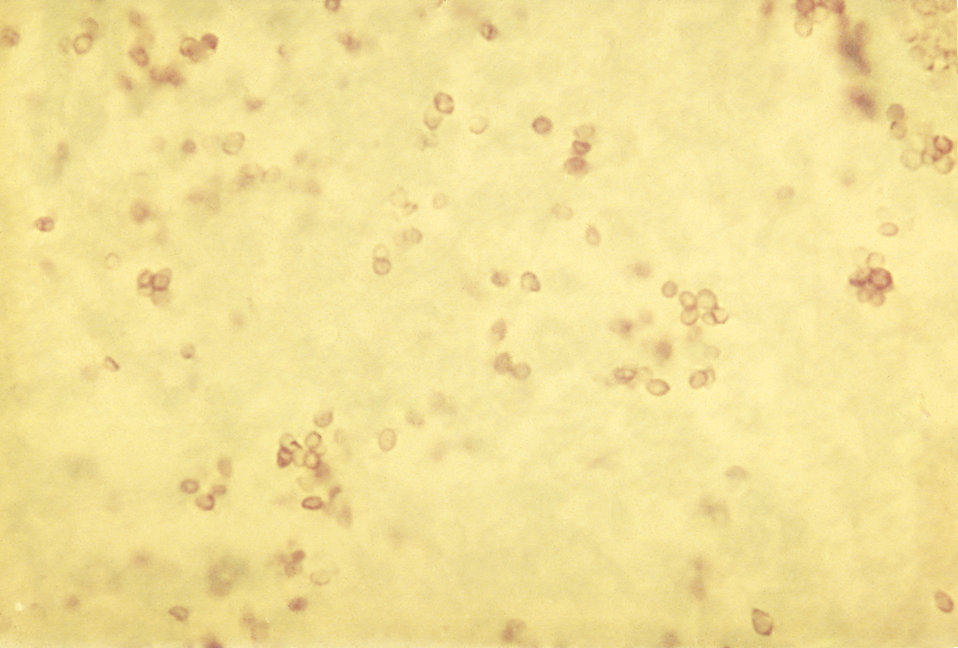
Yeast forms of Histoplasma capsulatum in tissue.